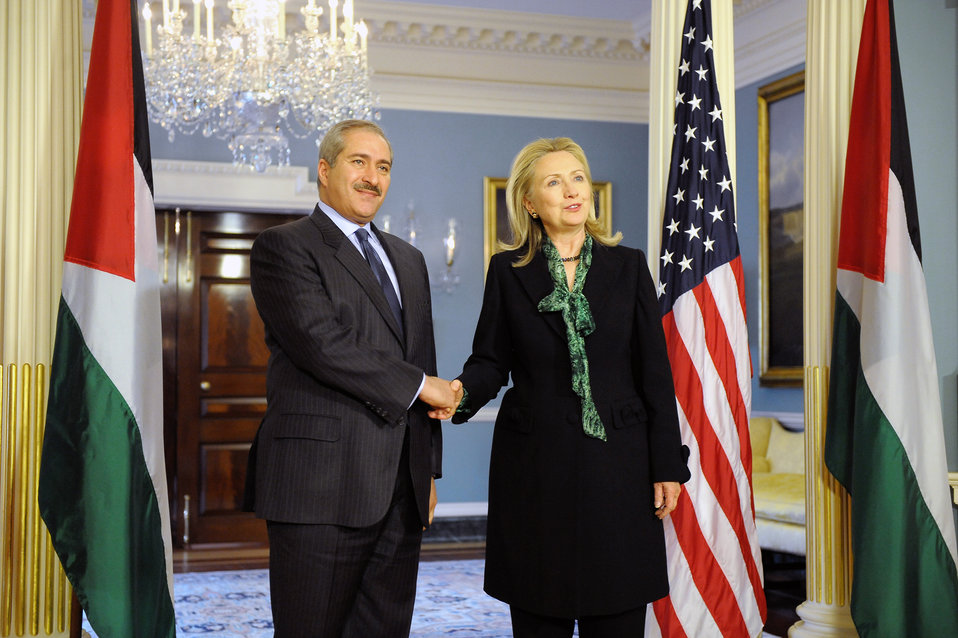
Secretary Clinton Shakes Hands With Jordanian Foreign Minister Judeh

U.S. Secretary of State Hillary Rodham Clinton shakes hands with Jordanian Foreign Minister Nasser Judeh at the U.S. Department of State in Washington, D.C., on March 2, 2012.